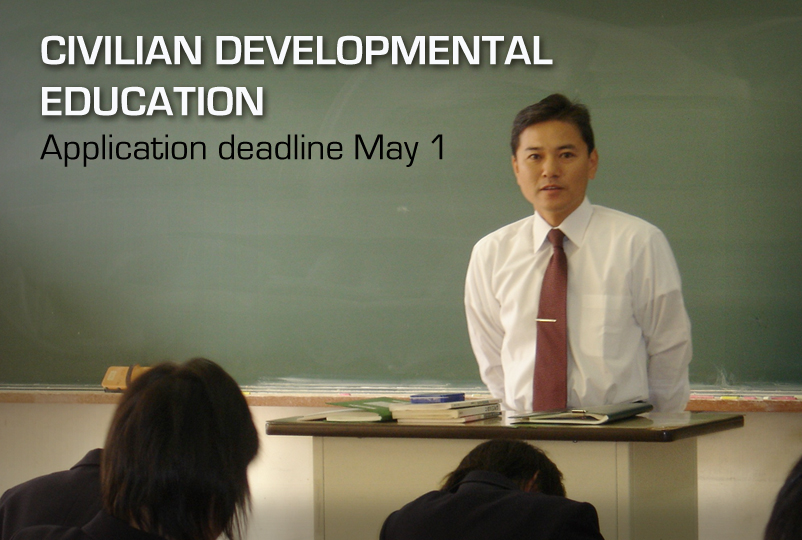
Civilian Developmental Education